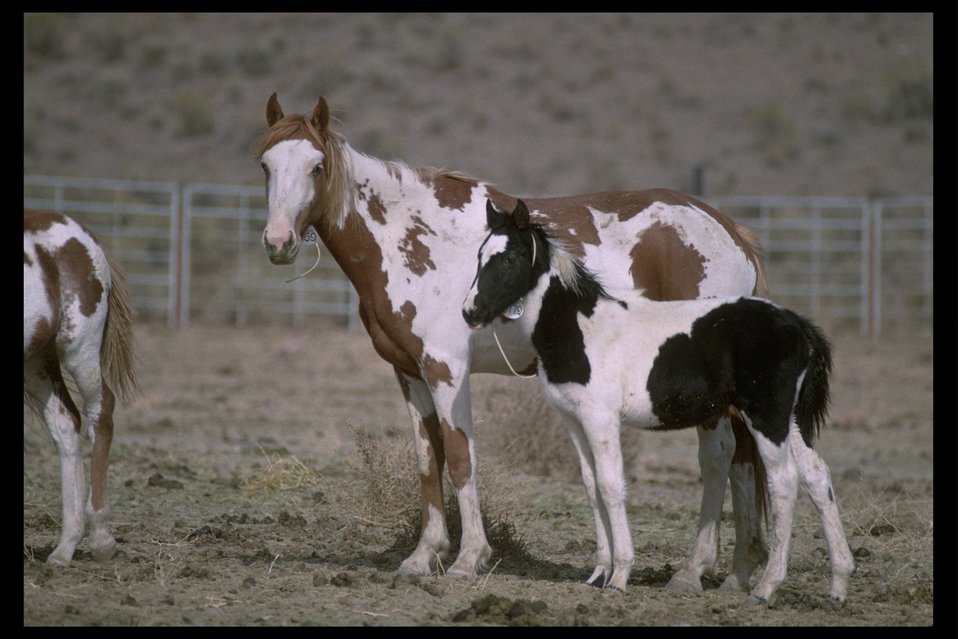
Colorful Pinto Wild Horses at Burns Wild Horse Corrals in South Steens Horse Management Area.